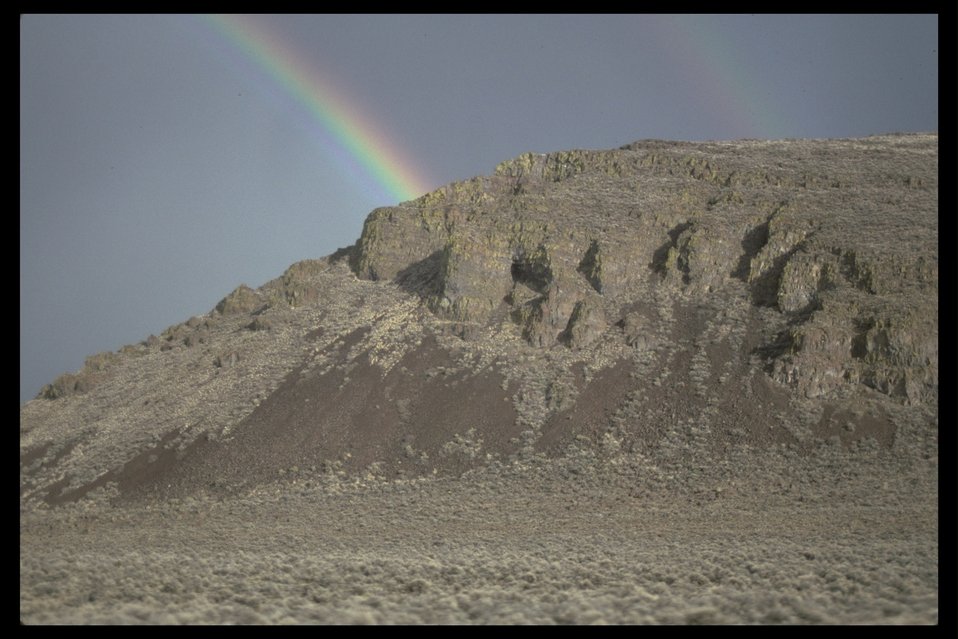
Rainbow of Catlow Rim.